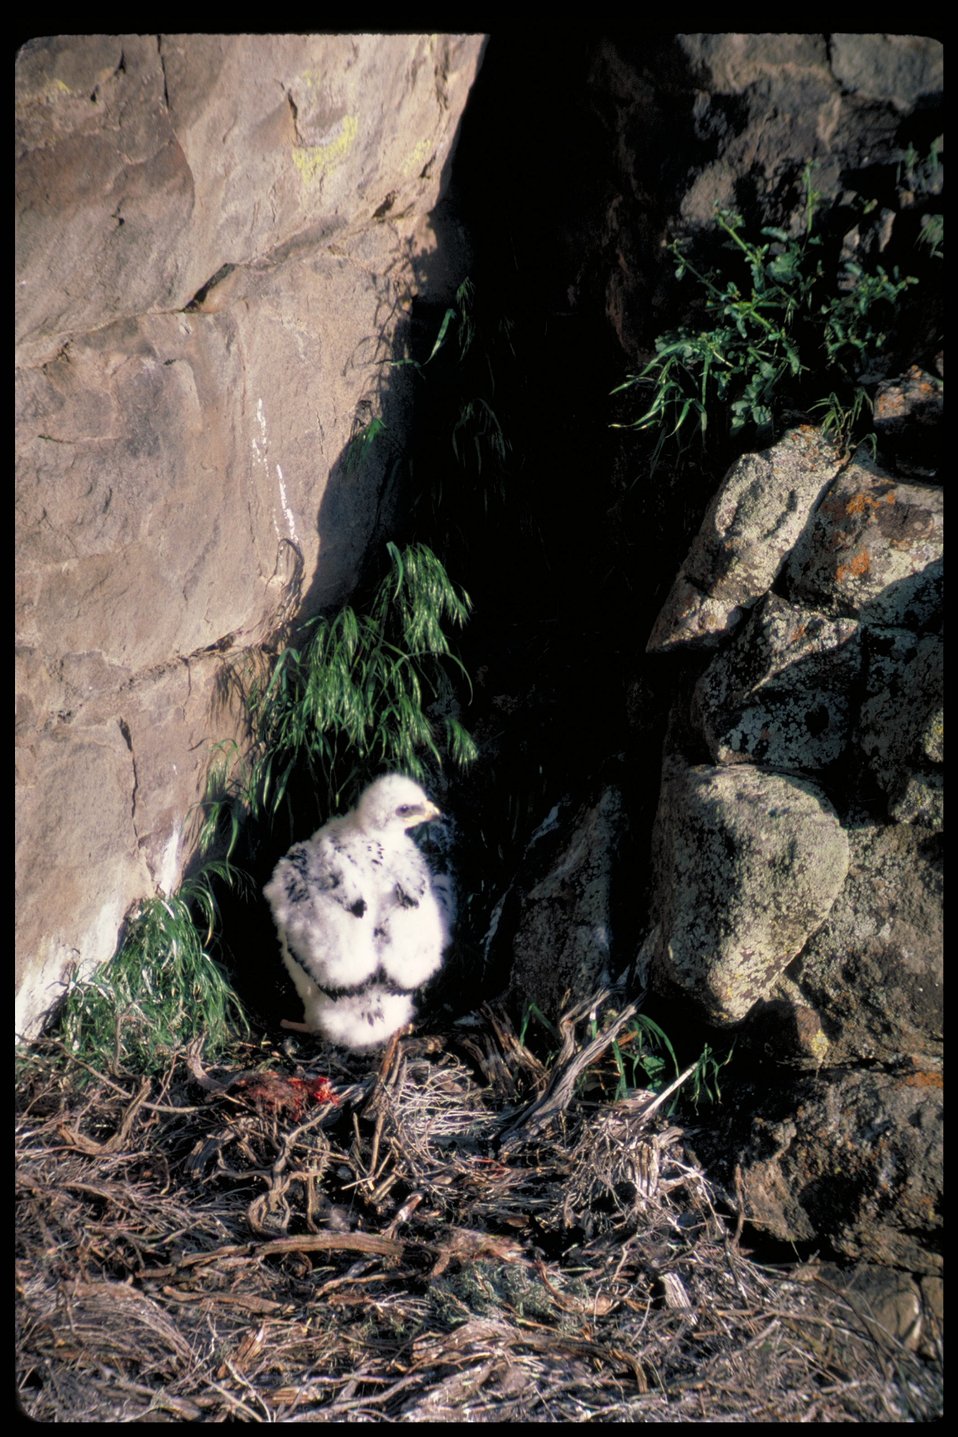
Golden Eagle Birds of Prey National Conservation Area BOP Owyhee Field Office LSRD Lower Snake River District